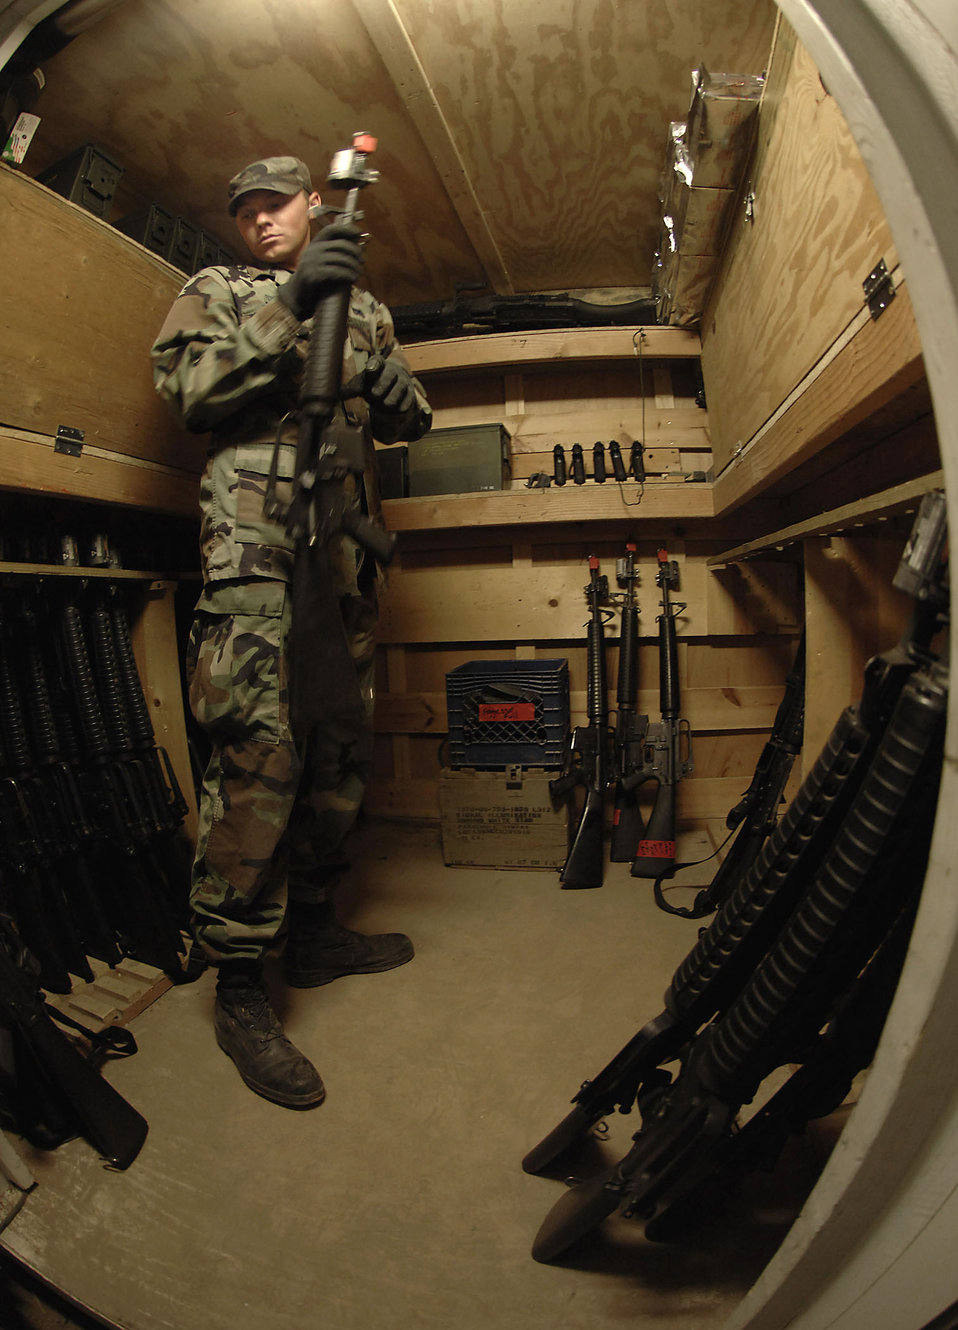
Global Engagement teaches leadership, base deployment

Cadet 1st Class Ryan Weaver prepares and checks weapons before handing them out to cadets during the Global Engagement course July 10 at the U.S. Air Force Academy in Colorado. The purpose of Global Engagement is to lay the foundation for Air Force Academy cadets of attitudes, knowledge and skills necessary to lead, fight, and win in a dynamic and diverse global environment.